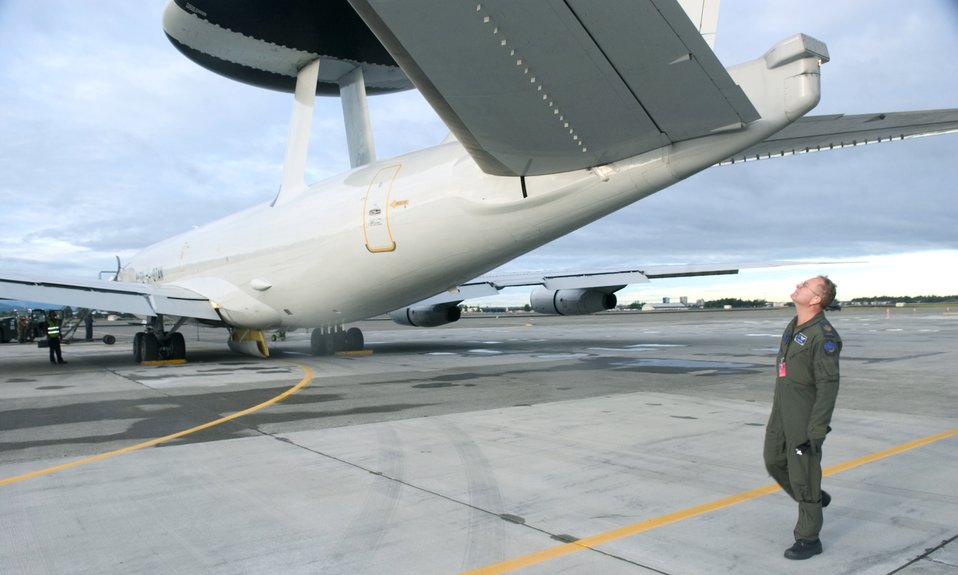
Cooperative Cope Thunder under way

Master Sgt. Dale Fisher conducts a pre-flight check July 26 on a NATO E-3 Airborne Warning And Control System aircraft at Elmendorf Air Force Base, Alaska. The aircraft and crew are participating in Cooperative Cope Thunder, a multinational exercise taking place in Alaska. Sergeant Fisher is an AWACS flight engineer.